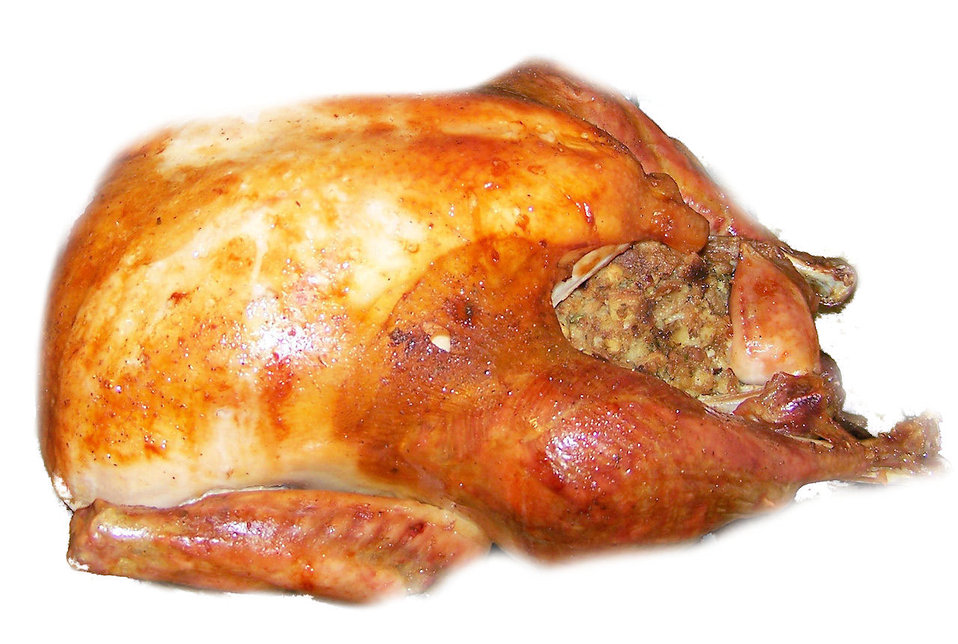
Stuffed turkey

Turkey stuffed from thanksgiving dinner.